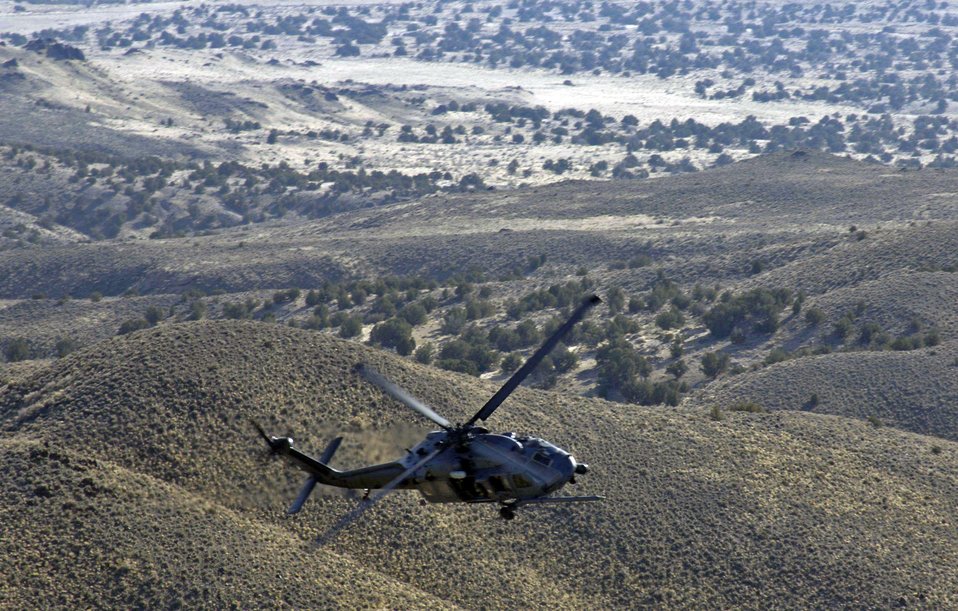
Combat search and rescue training in Utah

An HH-60 Pave Hawk manuevers over the Utah Test and Training Range during a combat search and rescue integration exercise Nov. 8 in Utah. The HH-60 is from Nellis Air Force Base, Nev. Members of the 34th Weapons Squadron from Nellis AFB led the search and recovery training. The exercise expanded the integration with Utah's 211th Aviation Group AH-64 Apache Joint Rotary Wing, 4th Fighter Squadron F-16 Fighting Falcon assets from Hill AFB, Utah, and special operations forces. Exercise participants also conducted extensive joint combat search and rescue operations against surface-to-air threats. The exercise is being run held Nov. 6 through 15.